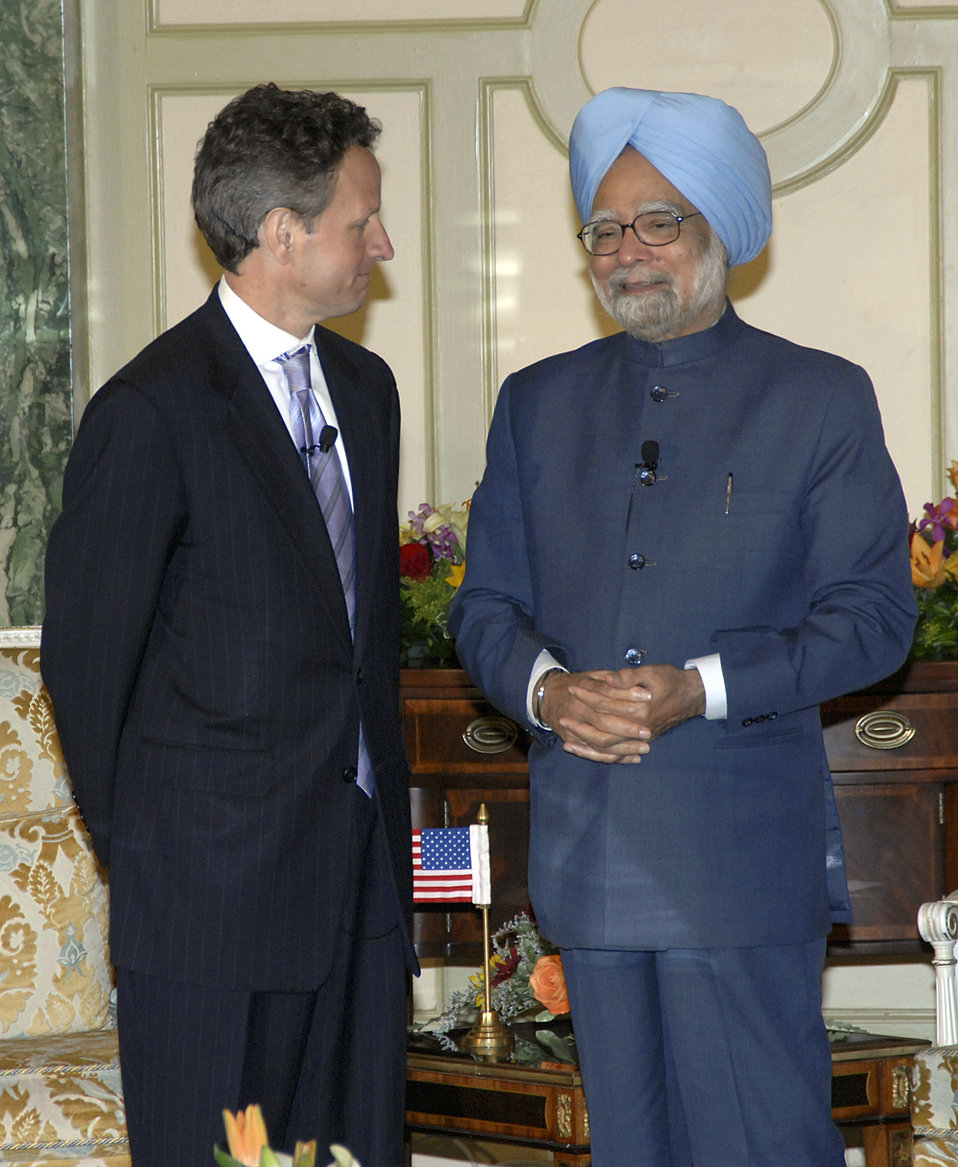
Prime Minister Singh of India

On November 25, 2009, Secretary Geithner participated in a bilateral meeting with Prime Minister Singh of India.